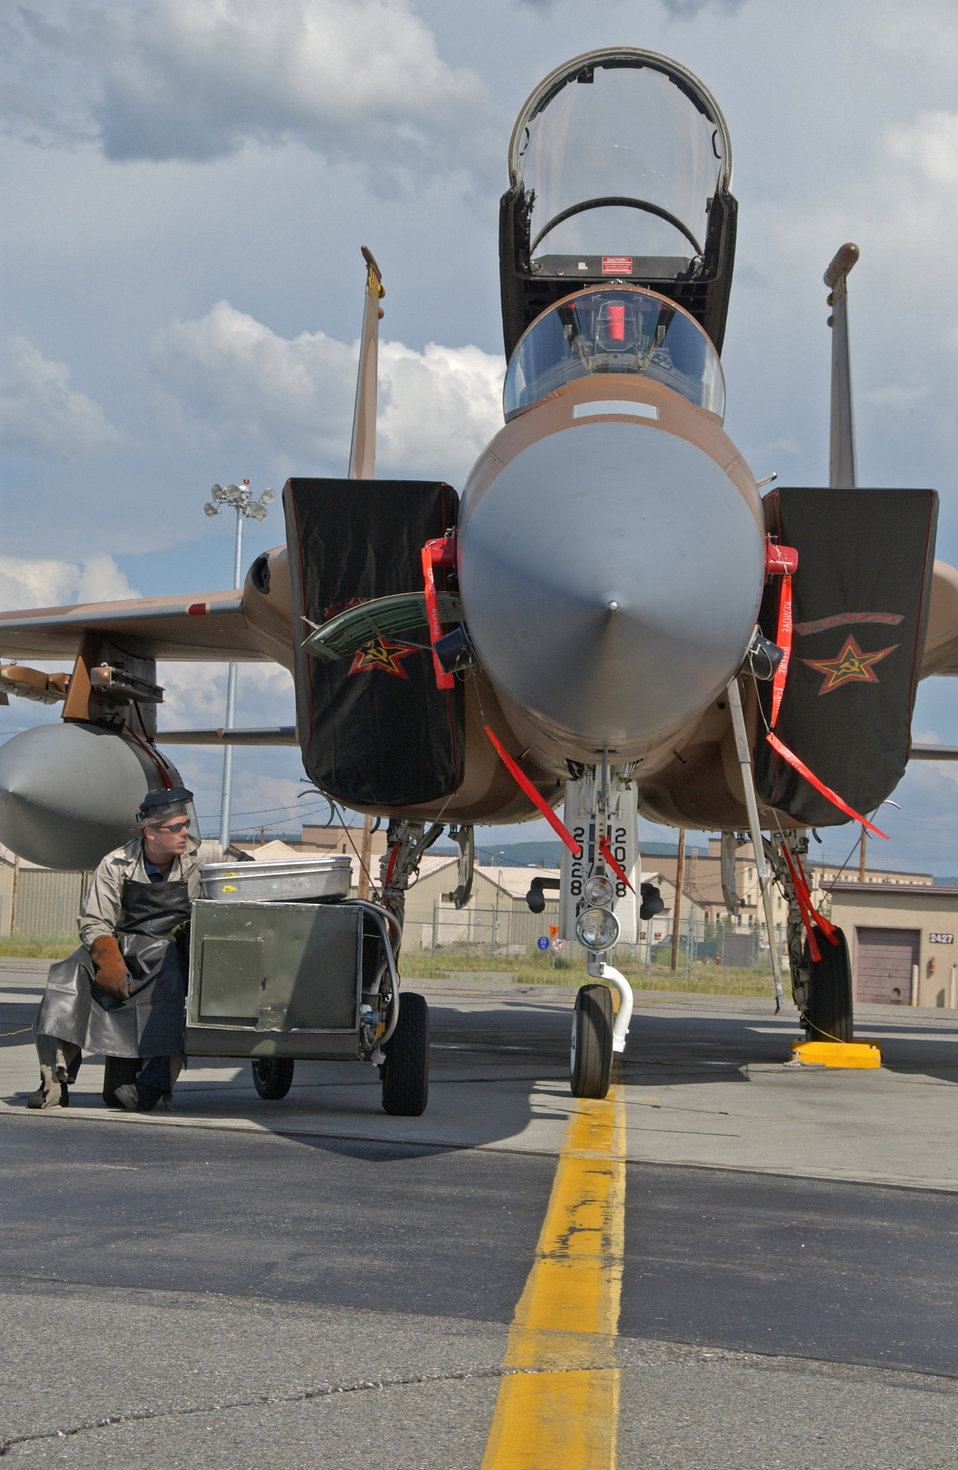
Red Flag-Alaska 07-3

Airman 1st Class Zachary Garretson services the liquid oxygen system on an F-15 Eagle July 9 on the Eielson Air Force Base, Alaska, flightline. The aircraft, from the 65th Aggressor Squadron at Nellis AFB, Nev., is at Eielson AFB to take part in Red Flag-Alaska 07-3, a multi-service, multi-platform coordinated, combat operations exercise, which runs through the July 27. Airman Garretson is a maintainer with the 57th Aircraft Maintenance Squadron at Nellis AFB.